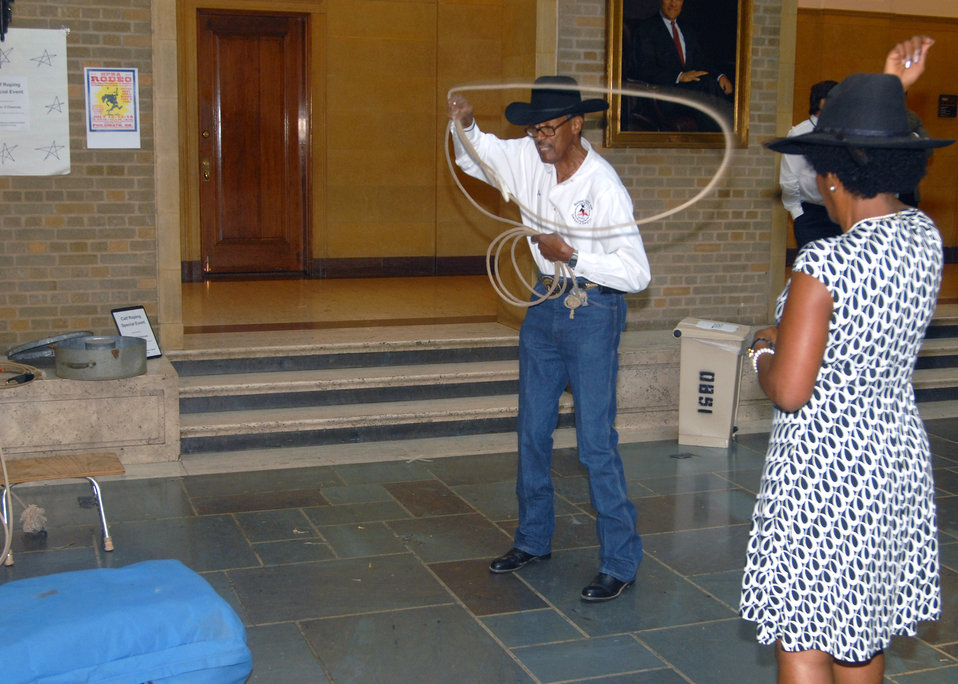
A U.S. Department of Agriculture (USDA) employee Joe Louis shows off his roping skills at USDA’s opening ceremony for the 2012 Combined Federal Campaign on Tuesday, Sept. 18, 2012 at the USDA Whitten Building, in Washington, D.C. USDA has set a goal of raising just under $2 million from their employees in the national capital area. The theme for this year’s CFC campaign is 'Choose Hope'.